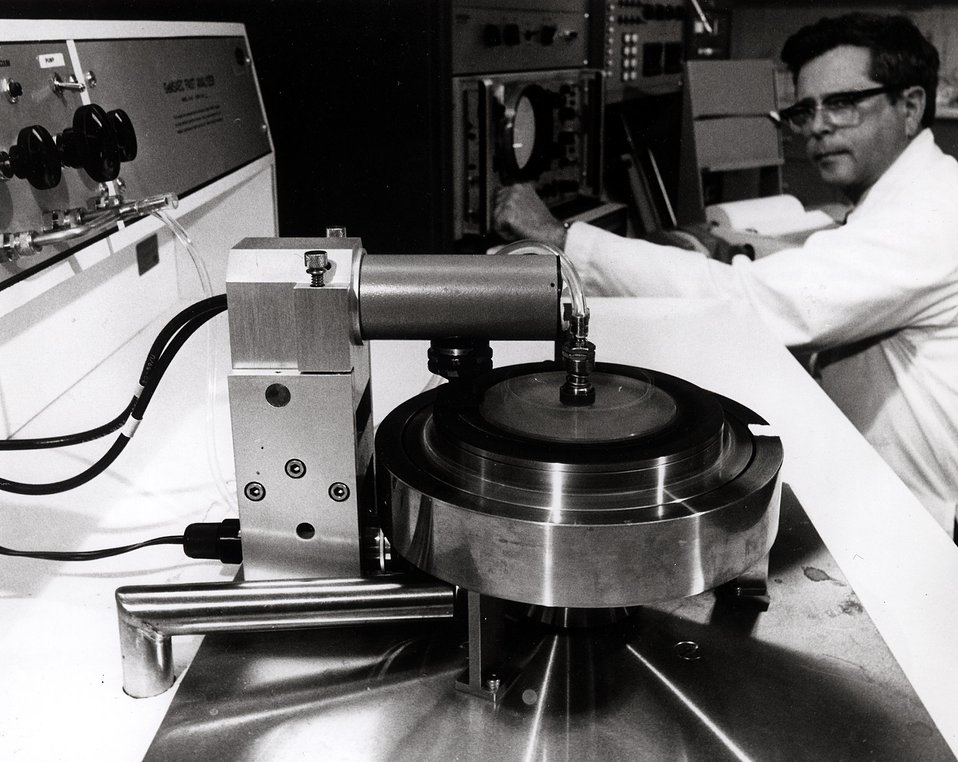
High-speed clinical analysis of body fluids is now possible using a centrifugal system called the GeMSAEC developed at the AEC's oak Ridge National Laboratory (ORNL), Oak Ridge, Tenn. c. 1972